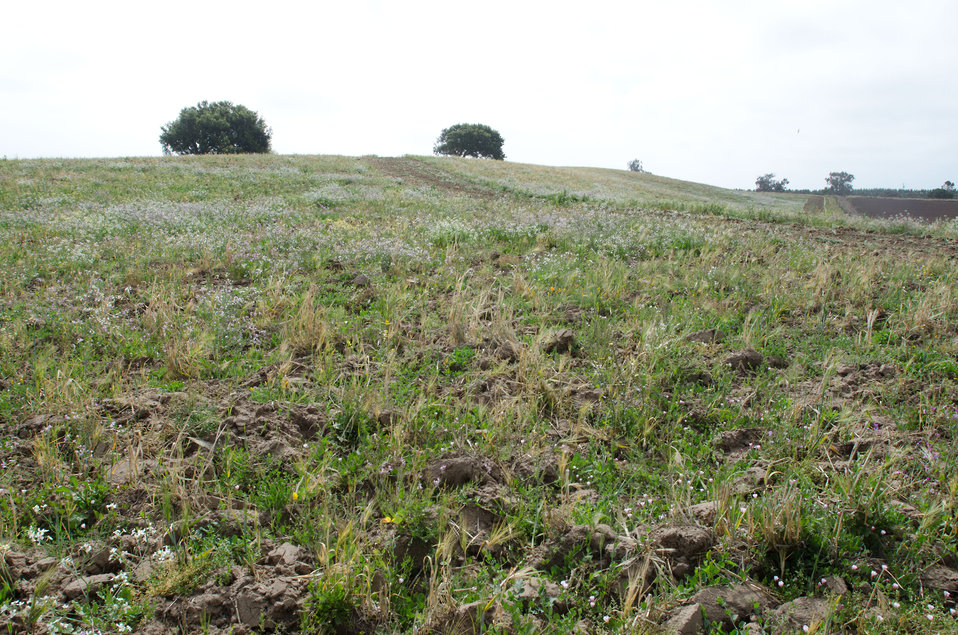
Cover crop on a resting farm field at Leafy Greens, operated by farmer Tom Heess, in the Salinas Valley, California on Thursday, June 16, 2011. Leafy Greens grows row crops of lettuce, broccoli, cauliflower sweet peas and seed beans. He uses rotational crop plantings to control weeds and plant disease. When a plot of land is at rest, he plants a cover crop of barley and rye grass because the roots hold the topsoil reducing erosion of the soil. He is converting his irrigation system from conventional sprinklers to micro irrigation. Where one system produces runoff and erosion of the soil; the other has little or no erosion, less maintenance, easy harvest and less water is needed. When seasonal rains produce runoff, the silt that flows with it is caught in sediment ponds. The ponds have grass, bushes and trees to hold the structure and allow the silt to settle. Spillways lead to holding ponds and eventually the Salinas River, a tributary of the Monterey Bay National Marine Sanctuary. So far, because of its design and efficiency, no water has made it to the river.